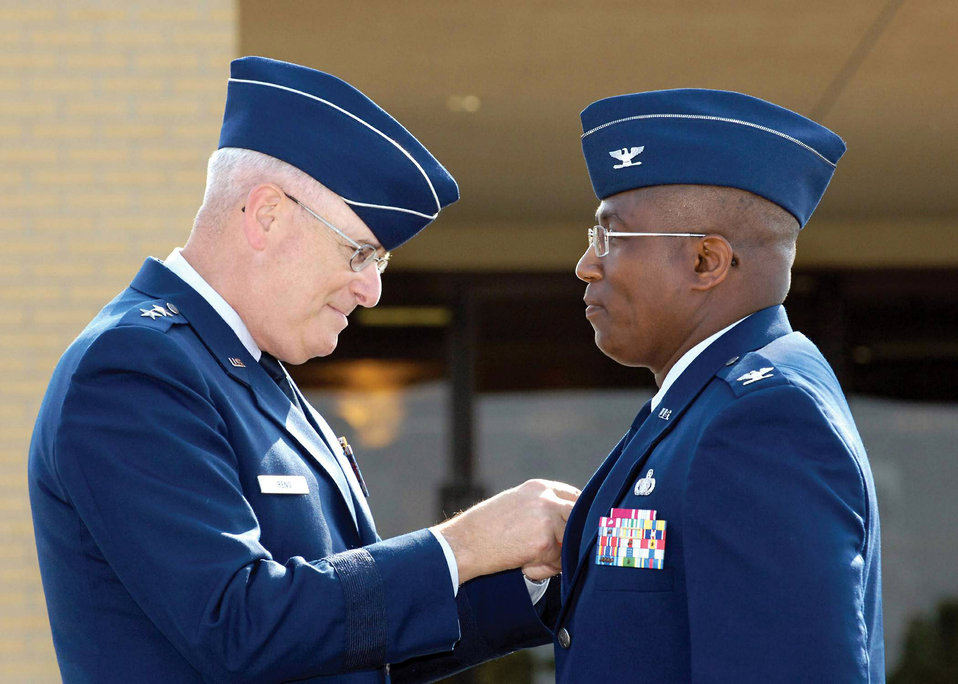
Change of command

Maj. Gen. Loren Reno affixes a commander?s pin to Col. Allen Jamerson?s uniform moments after the colonel became the new commander of the 72nd Air Base Wing during a July 18 ceremony at Tinker Air Force Base, Okla. The wing has African Americans currently serving in its top three leadership positions.